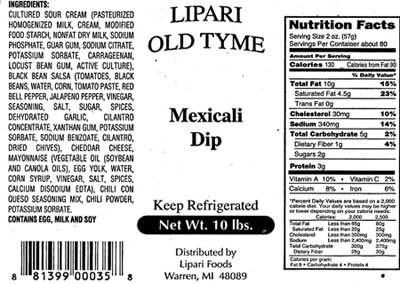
RECALLED – Mexicali Dip

November 1, 2013 – Product Recall – Dutch Treat Salads, LLC Voluntarily Recalls Mexicali Dip Due to Possible Health Risk.